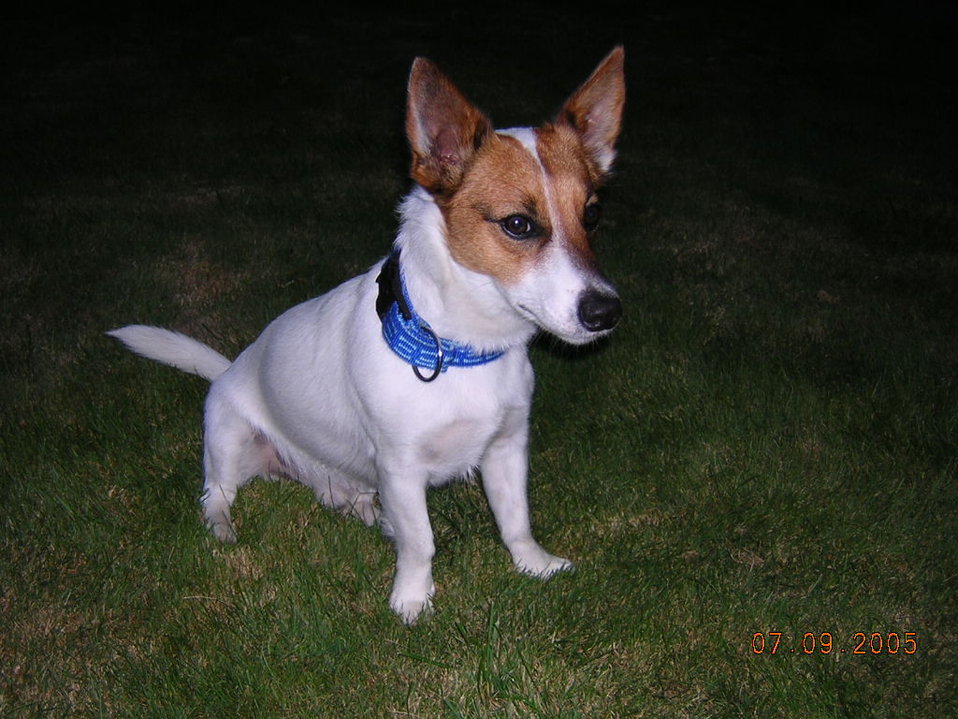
Deutsch: Jack Russel Terrier in Jagdposition